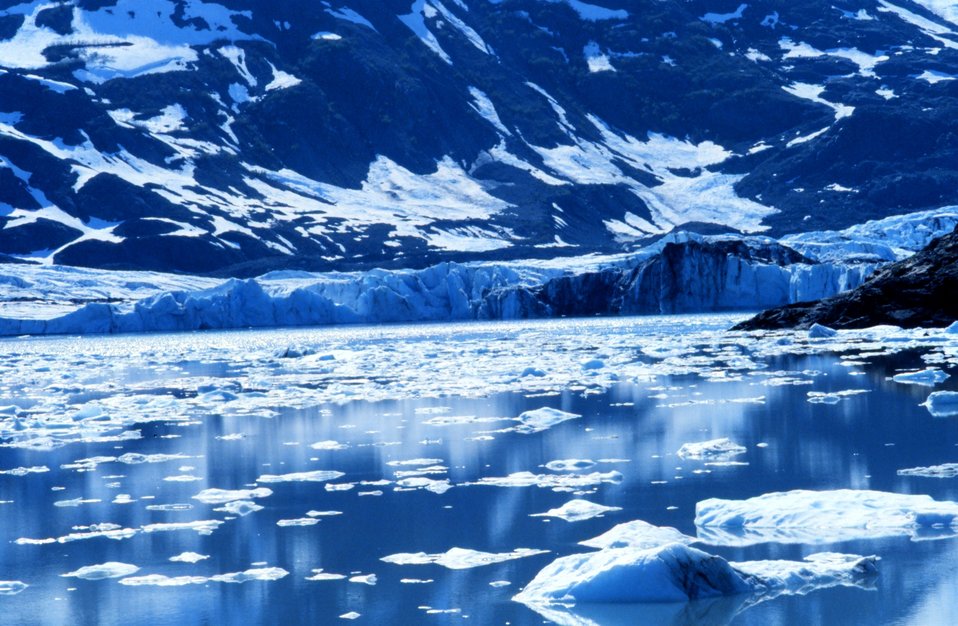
Glacier and small icebergs in Kenai Fjords